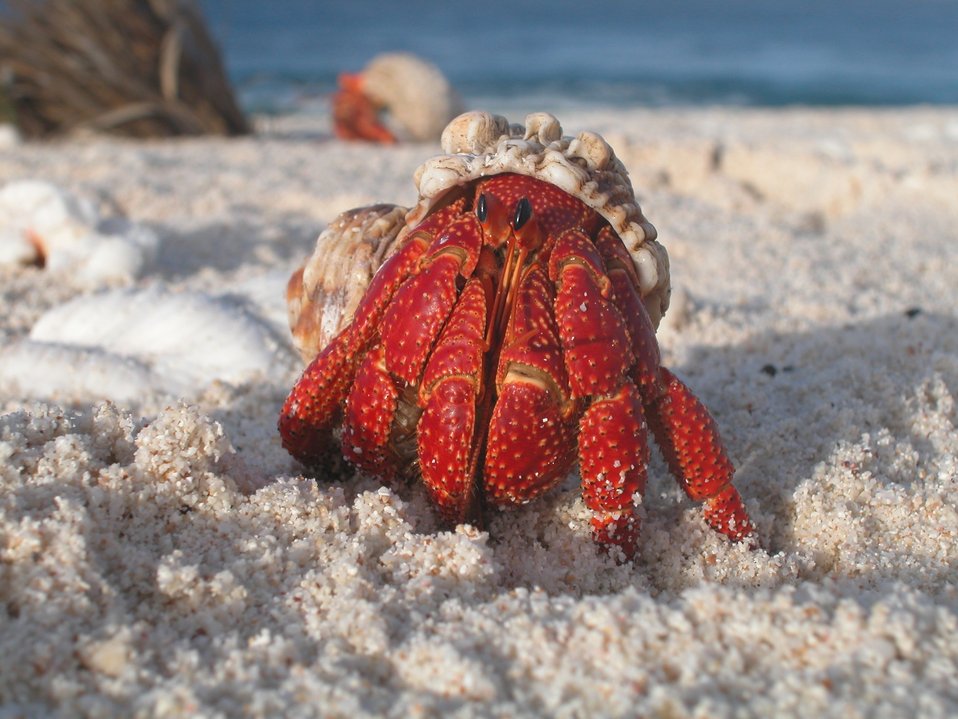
Howland Island NWR and hermit crab

A hermit crab emerges from its shell at Howland Island National Wildlife Refuge, in the Pacific Ocean 1,600 miles southwest of Honolulu. (USFWS)